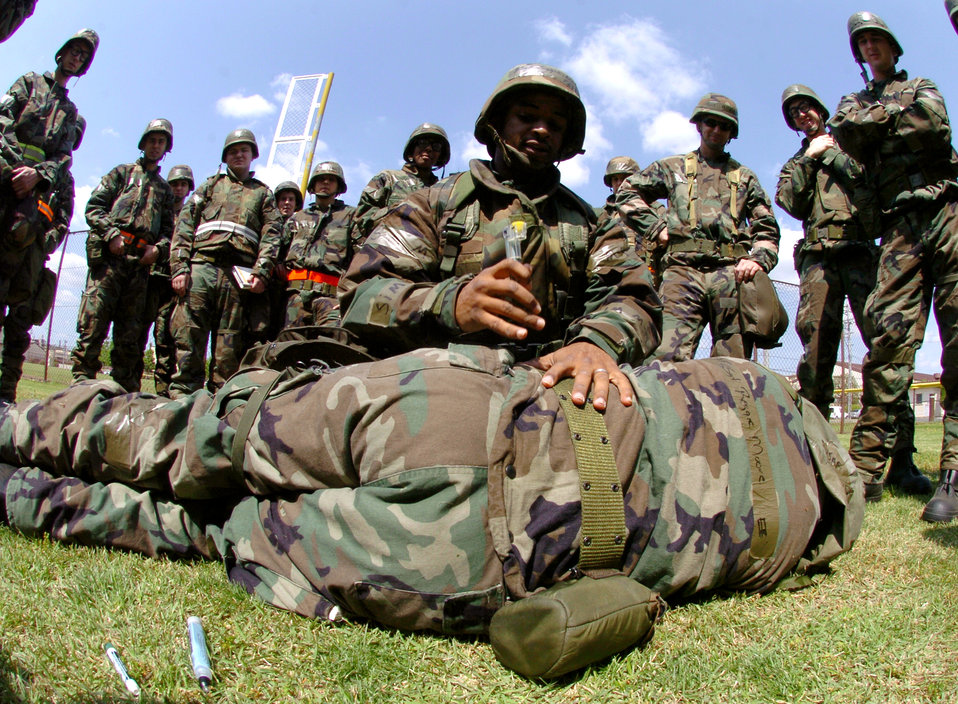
Civil engineers train for chemical attacks

YOKOTA AIR BASE, Japan -- Staff Sgt. Walter Foggie